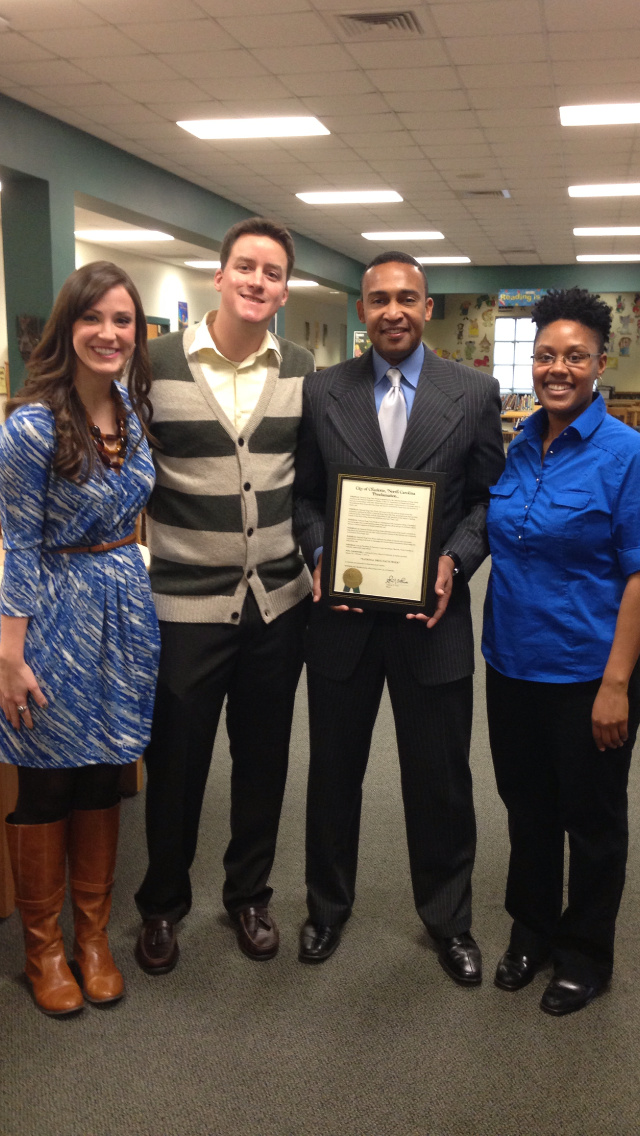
Anuvia Team with Patrick cannon

L to R: Marcella Young, Clint Grant, Charlotte, NC Mayor Pro Tem Patrick Cannon, and Nicole Augustine